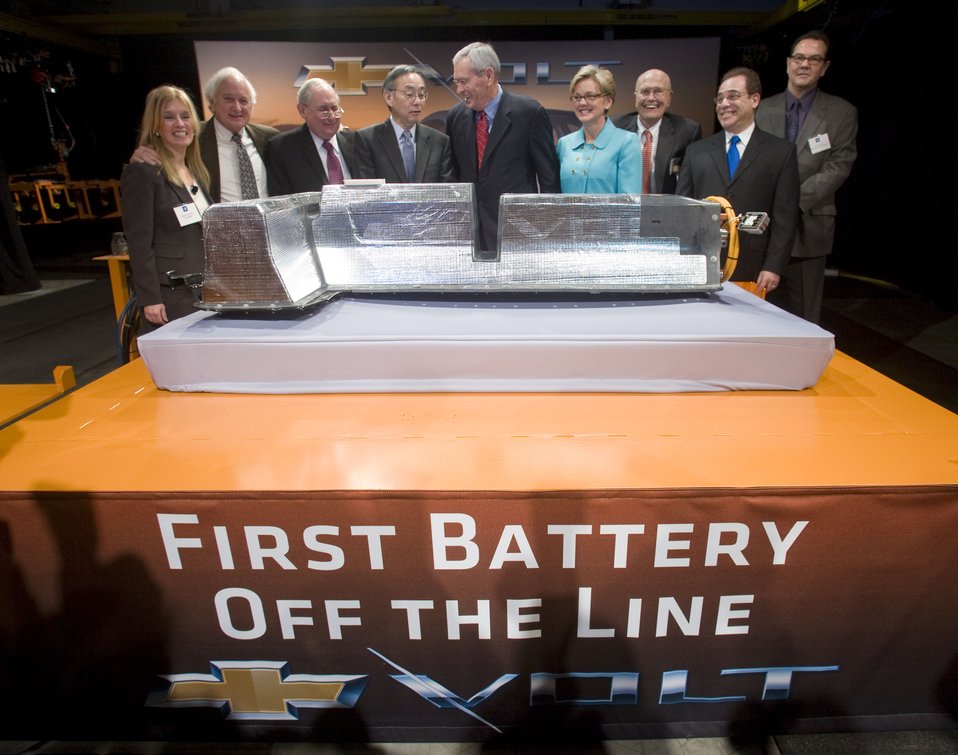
ChevyVoltFirstBattery08

U.S. Energy Secretary Steven Chu (left center) talks with General Motors Chairman and CEO Ed Whitacre (center) and other elected officials after the first Chevrolet Volt battery came off the assembly line at the GM Brownstown Battery plant in Brownstown Township, Michigan Thursday, January 7, 2010. The facility is the first lithium ion battery pack manufacturing plant in the U.S. operated by a major automaker.